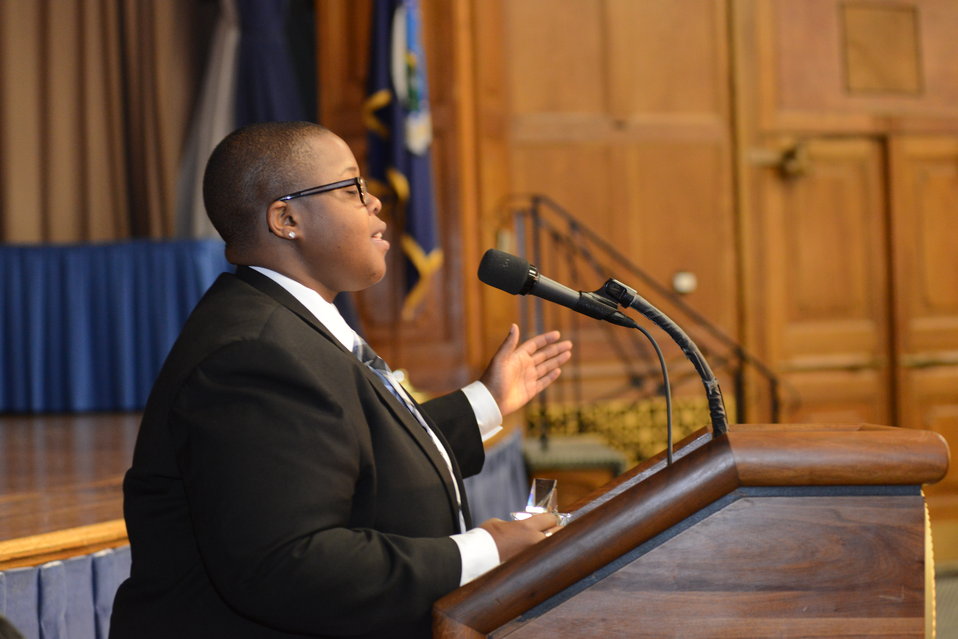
U.S. Department of Agriculture (USDA) Assistant Secretary Civil Rights (ASCR) Special Assistant Ashlee Davis introduces National Gay and Lesbian Task Force Senior Counsel Kylar Broadus at the 2014 Lesbian/Gay/Bisexual/Transgender (LGBT) Pride Observance event held in the Jefferson Auditorium at USDA in Washington, D.C. on Thursday, Jun. 5, 2014.